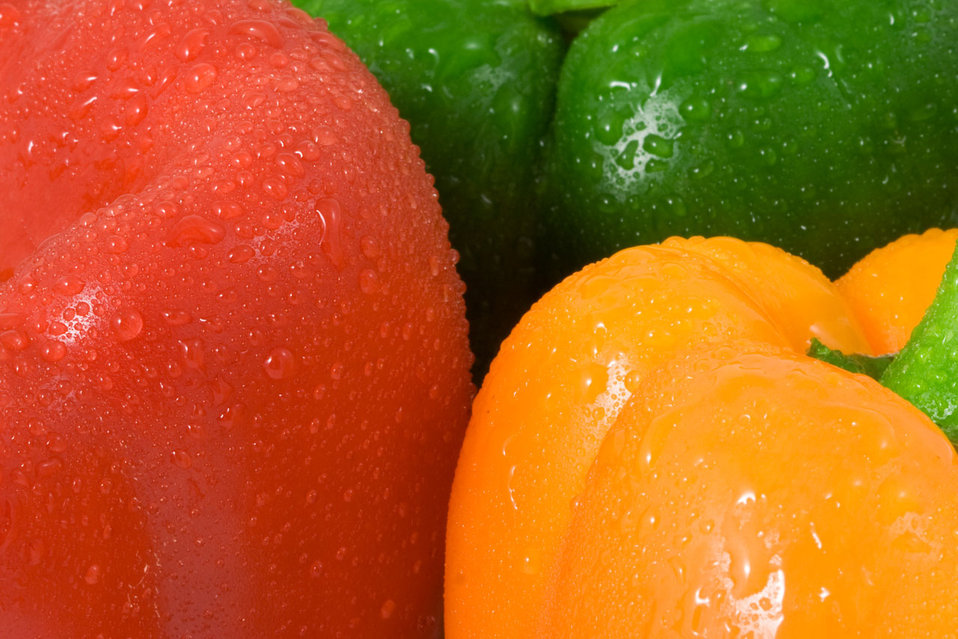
Three colors

Close up of fresh peppers.